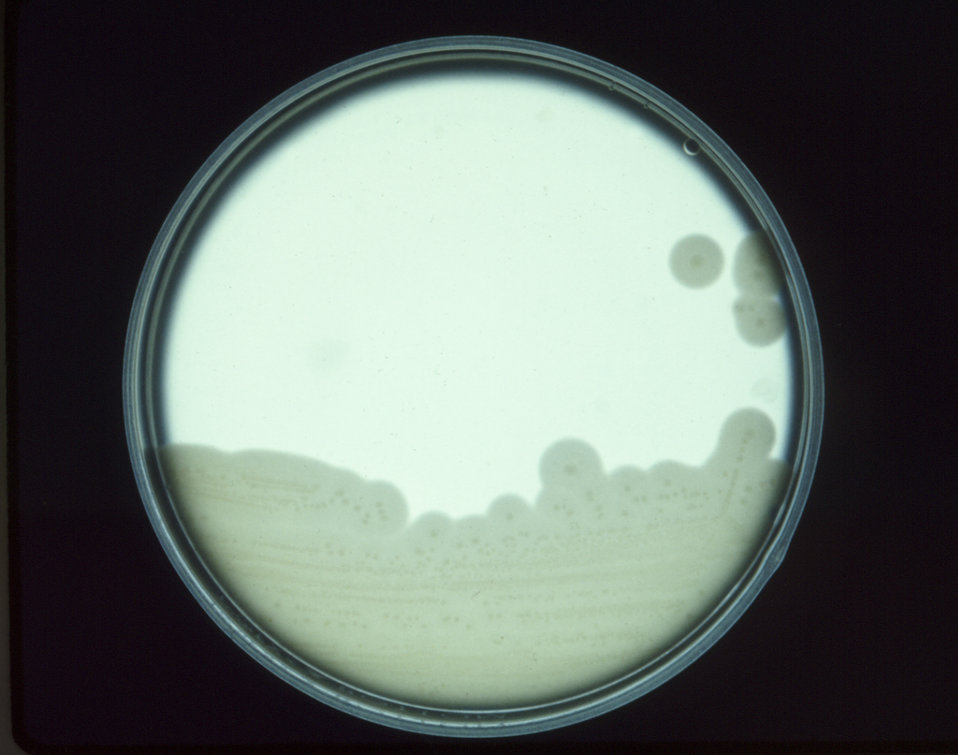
These are cultures of the anaerobic bacterium Clostridium perfringens grown on an egg yolk agar plate.